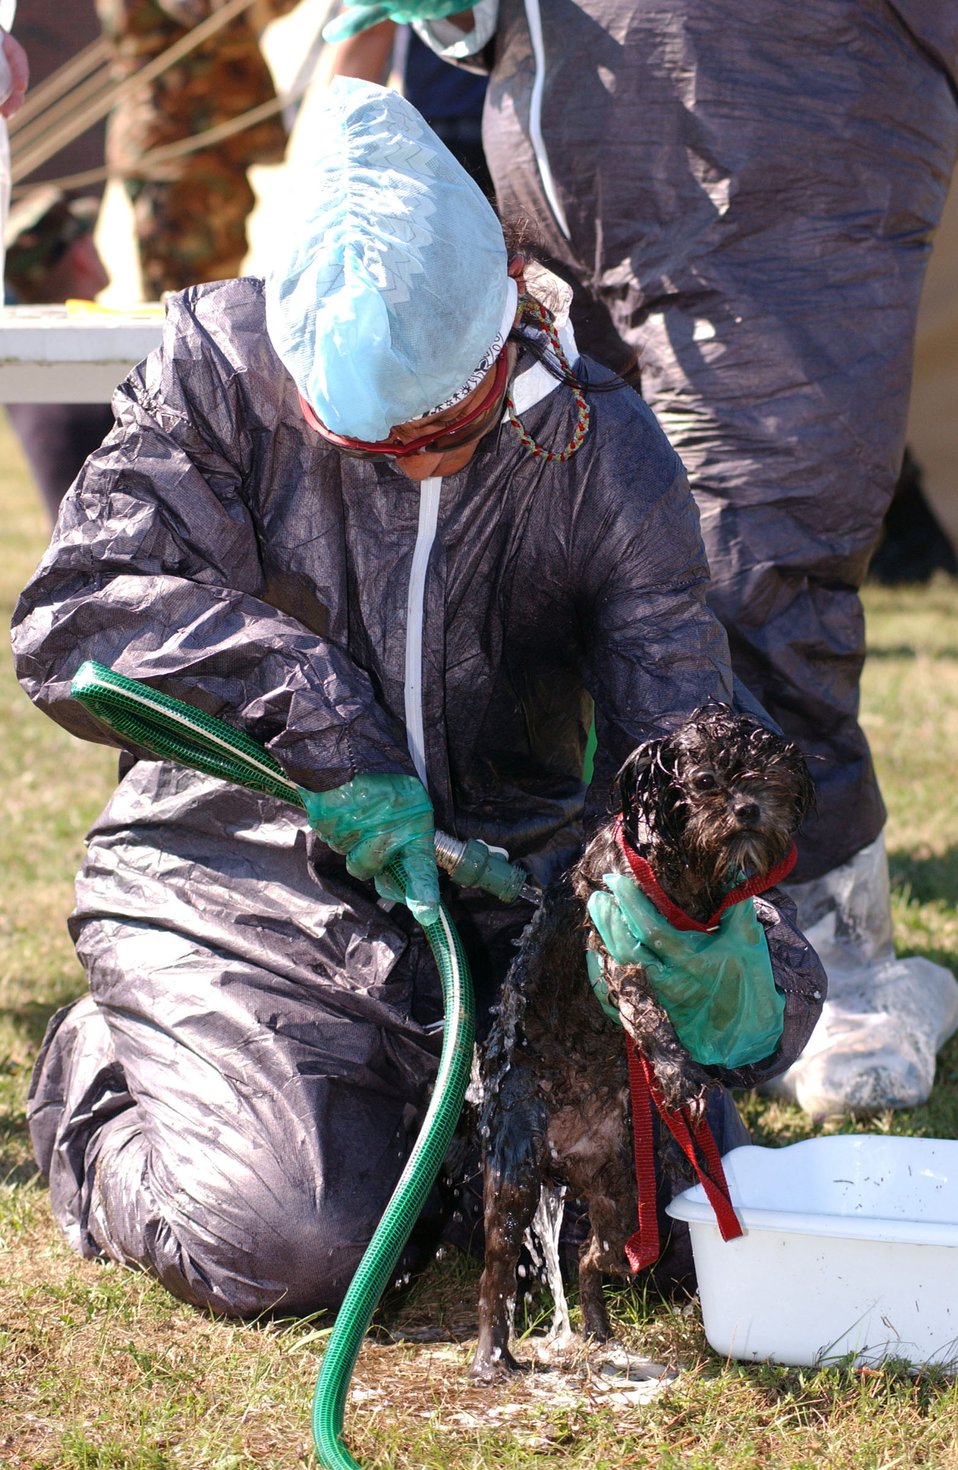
Cleaning Miss Daisy

OTIS AIR NATIONAL GUARD BASE, Mass. -- A volunteer working with the Massachusetts Society for the Prevention of Cruelty to Animals cleans Miss Daisy, a miniature poodle here Sept. 8. Louisiana evacuees and their pets will receive shelter in dormitories at Camp Edwards.